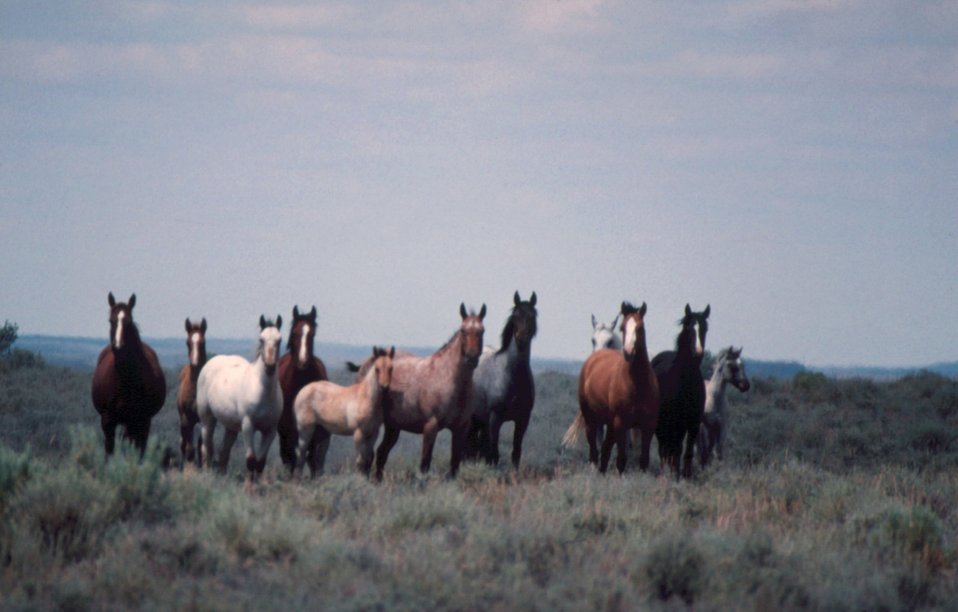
Warm Springs Wild Horse Management Heard Area.